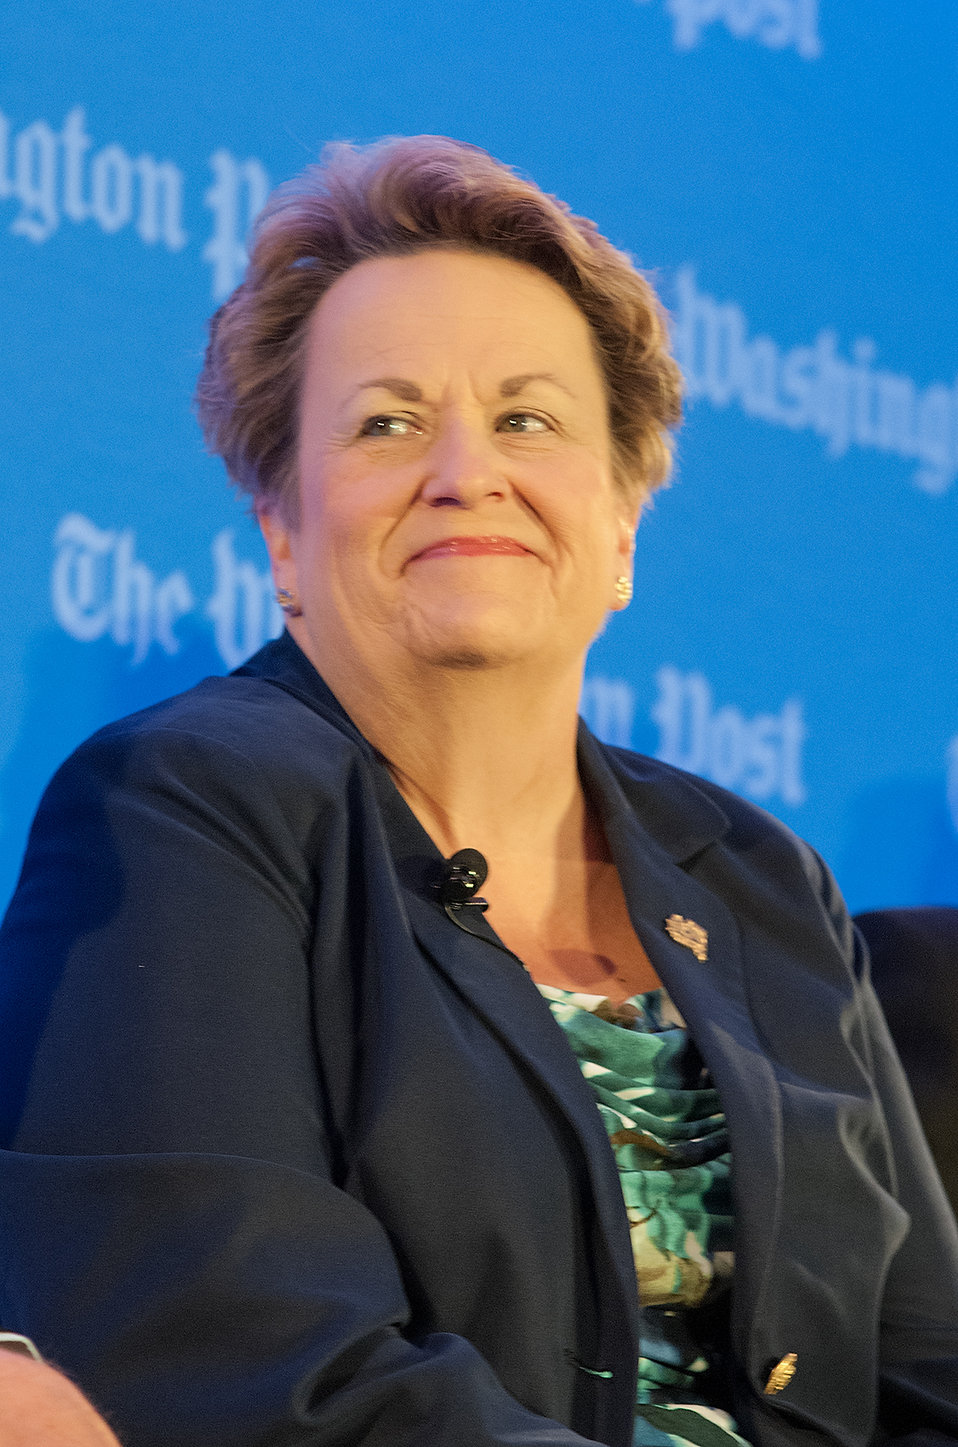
School Nutrition Association President Sandra Ford answers questions presented by Mary Jordan, Editor, Washington Post Live and moderator of the annual live forum, “Future of Food: Building a Sustainable Food System 2013,” sponsored by the Washington Post in Washington, D.C. on Wednesday, May 22, 2013. Agriculture Secretary Tom Vilsack and leading agricultural, government and nutrition experts discussed expanding healthy, sustainable food systems, public-private partnerships, the market’s role in nutrition and the future of agricultural innovation.